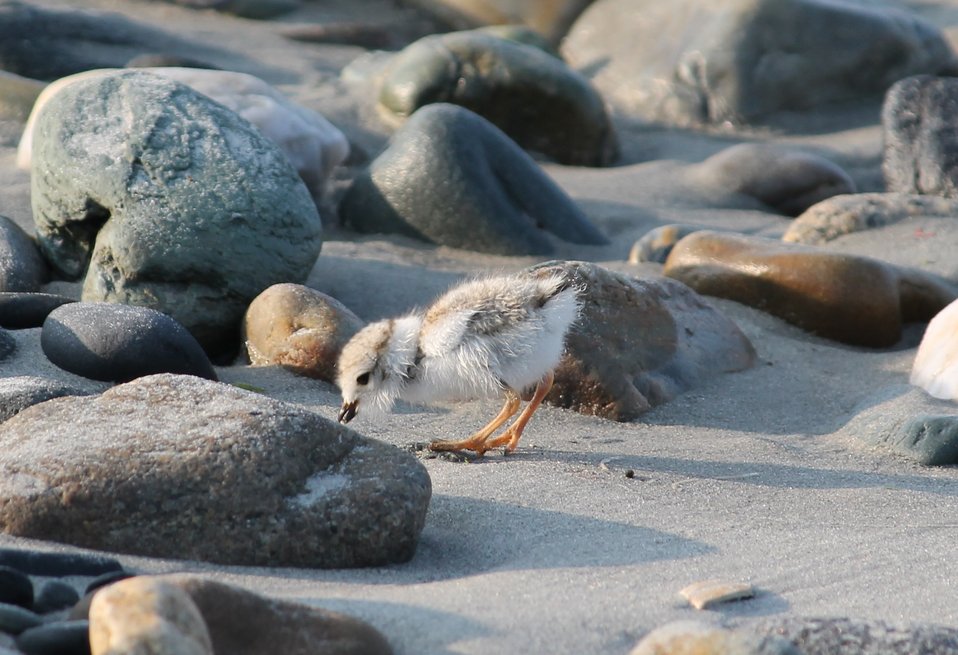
Piping Plover (RI)

Piping Plover chick photographed at Second Beach in Middletown, Rhode Island.